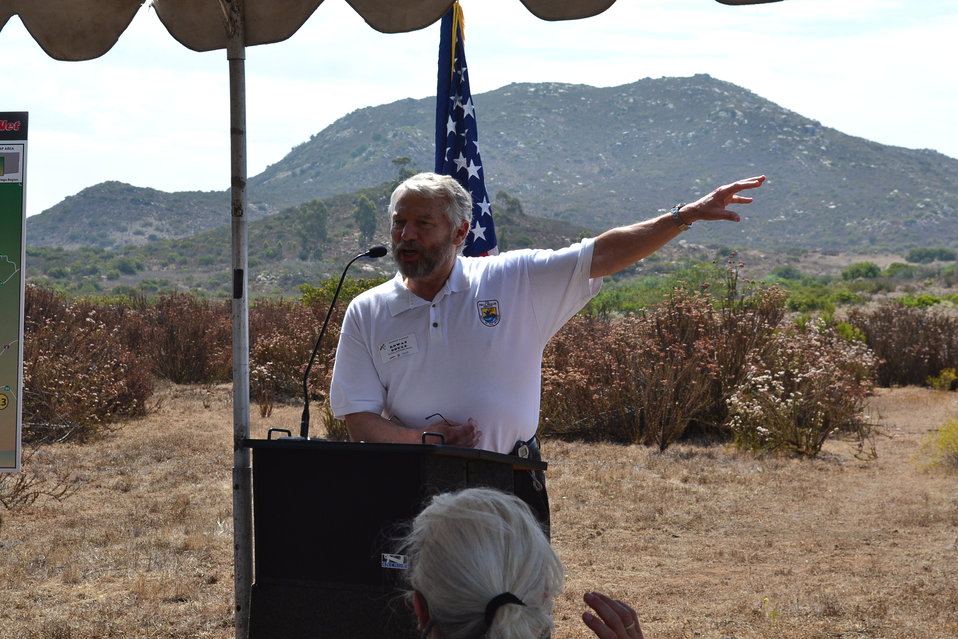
Hidden Valley Ribbon Cutting 7-11-12 002

Assistant Director of the USFWS, Rowan Gould. (USFWS)